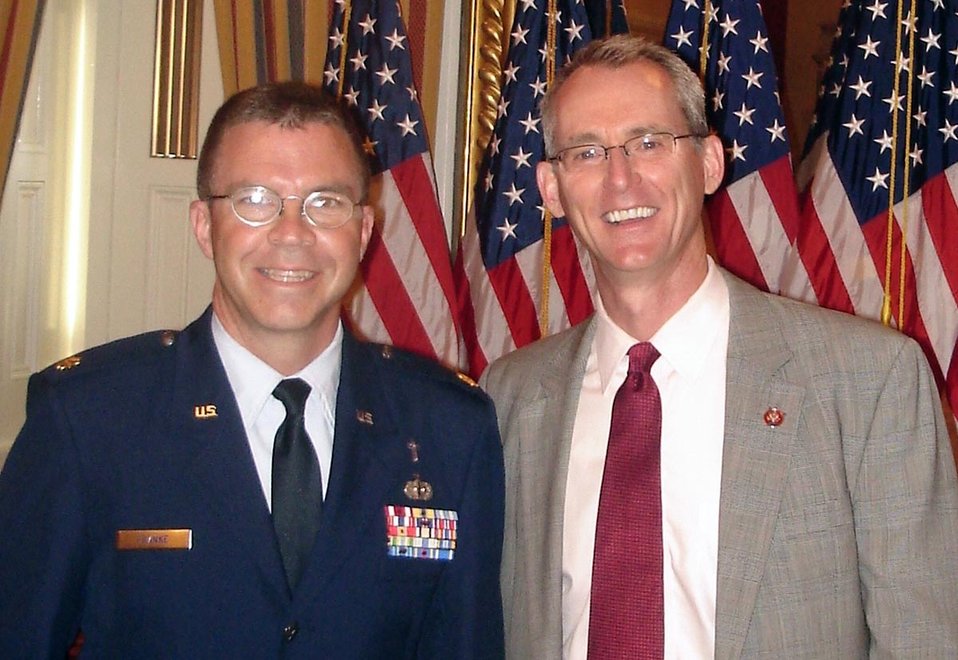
Chaplain delivers House invocation

Chaplain (Maj.) Matt Franke (left) delivered the invocation July 10 to begin a new legislative day in the U.S. House of Representatives. Chaplain Franke serves as a legislative fellow in the office of Rep. Bob Inglis of South Carolina (right).